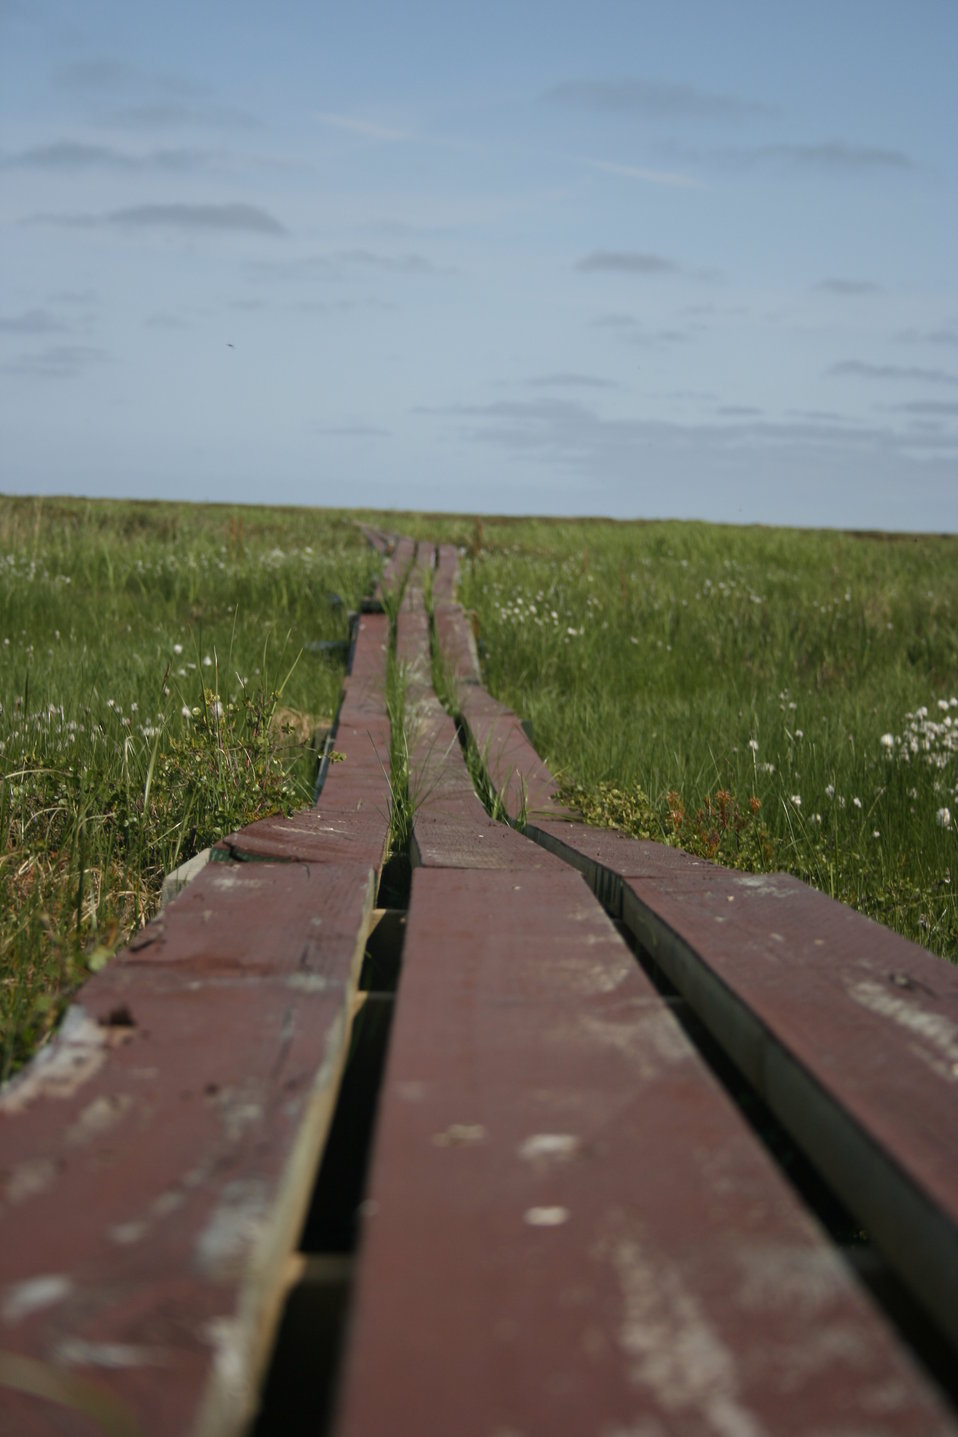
Boardwalk

To reduce our traffic on the tundra some of the field camps have permanent boardwalks.

USFWS Yukon Delta NWR
Photo Credit: Allen Stegemen Public domain